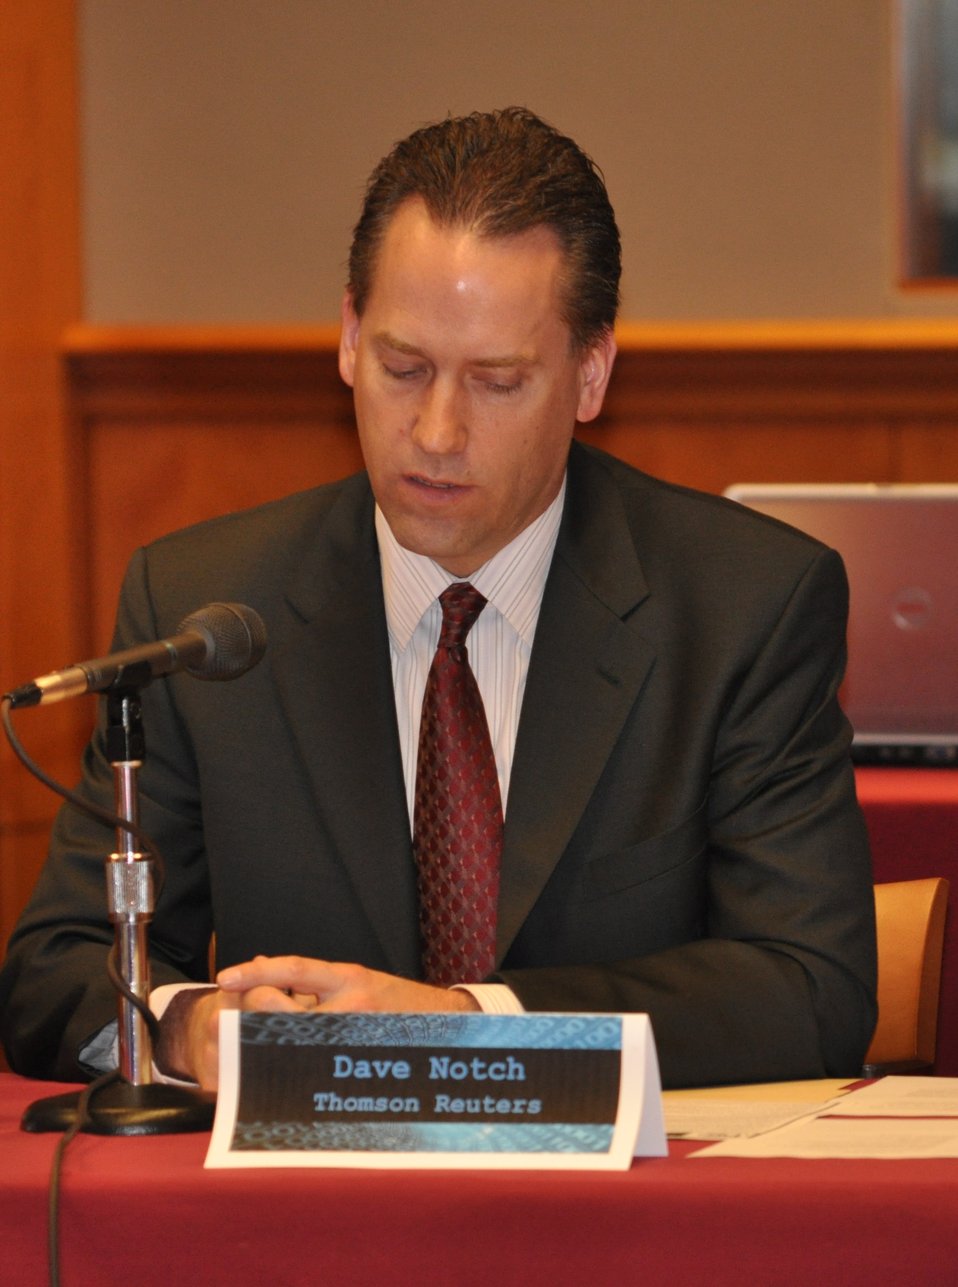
Cybersecurity 5-16

Cybersecurity for Small Business Roundtable; May 16, 2011